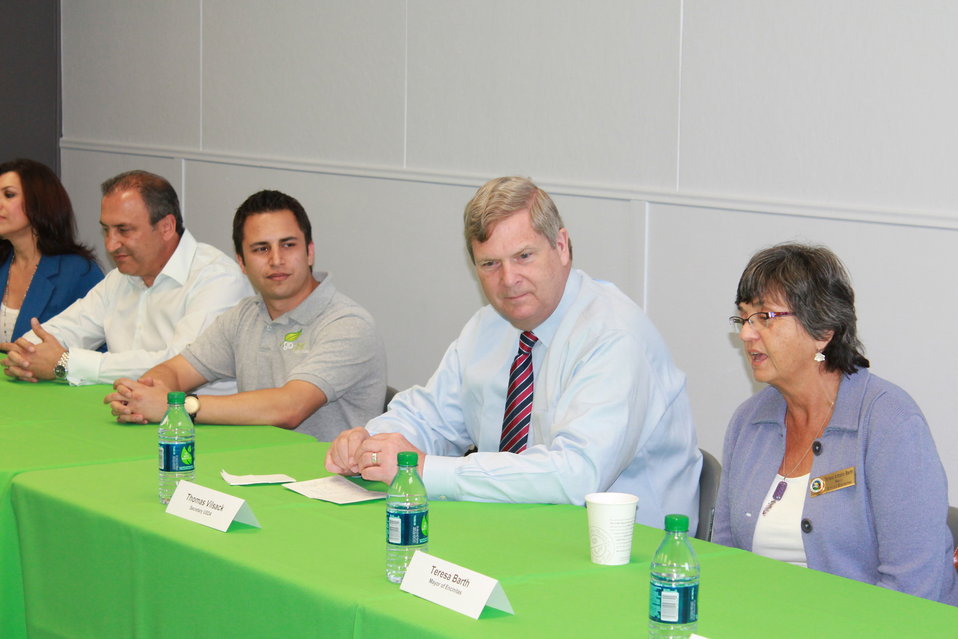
(R to L) Encinitas, California Mayor Teresa Barth, Agriculture Secretary Tom Vilsack, GoGreen Agriculture Chief Executive Officer Pierre Suleiman, and organic producers at a roundtable discussion in Encinitas, CA on Apr. 17, 2013. GoGreen Agriculture is a family owned and operated hydroponics organic producer of lettuce, kale and spinach. GoGreen builds mini-farms in or near large cities and sells the premium produce locally. This eliminates major transportation time and cost, improves freshness, reduces petroleum consumption, and provides local jobs.